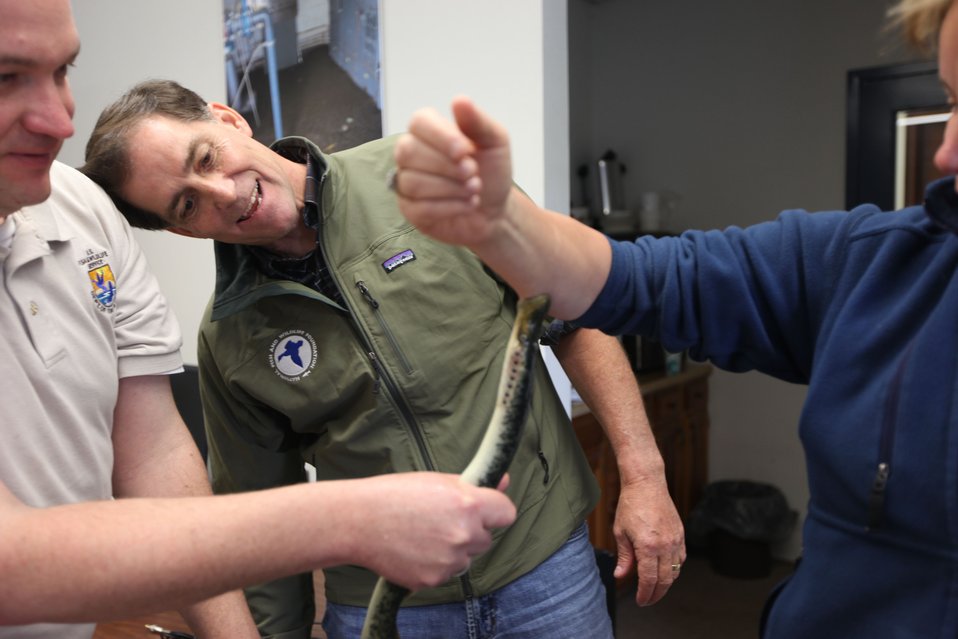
Deb Rocque, Dan Ashe, Brad Young and a lamprey!

U.S. Fish & Wildlife Service Director Dan Ashe visits the Northeast Region
for a tour of the White River National Fish Hatchery in Bethel, Vermont on
April 27, 2012. The hatchery was devastated by Tropical Storm Irene and
Dan Ashe had the chance to meet and thank the staff for their heroic work.
Director Ashe also visited restoration/flood response/fish passage project
sites in Rochester, Vermont and met with local officials and staff from the
White River Partnership.